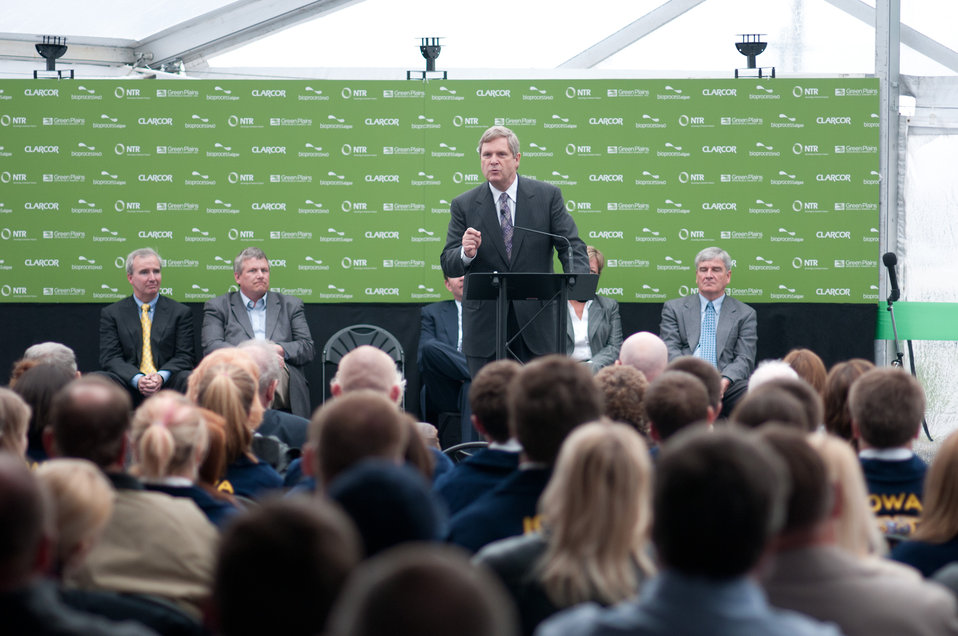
Agriculture Secretary Tom Vilsack speaks at the Grand Opening ceremony of Phase II of the BioProcess Algae facility at Green Plains Renewable Energy (GPRE) Inc. on Friday, Apr. 15, 2011 in Shenandoah, IA. Phase II is a key component in the commercial scale photo bioreactors/harvesters. The operation is co-located within an GPRE’s ethanol factory where BioProcess Algae technology is used to treat waste products; carbon dioxide, recycled heat and water to mass-produce algae. Algae from this facility are used for animal feeds, pharmaceutical and beauty products.